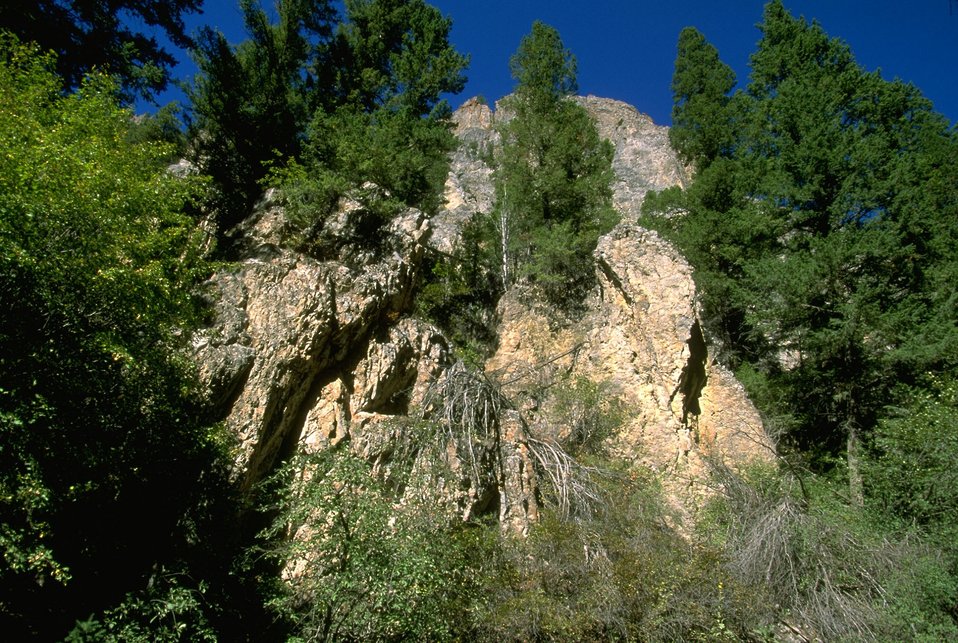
Rattler Gulch-Limestone Cliffs ACEC (area of critical environmental concern)